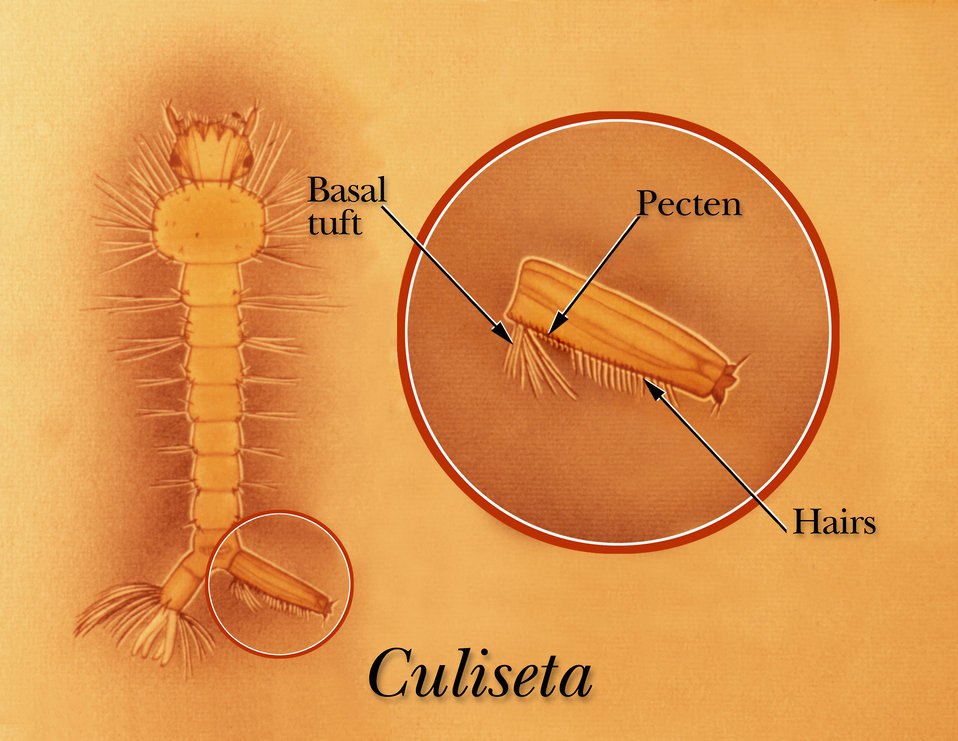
An illustration identifying the basal tuft, pecten and rows of hairs of a Culiseta mosquito larva.